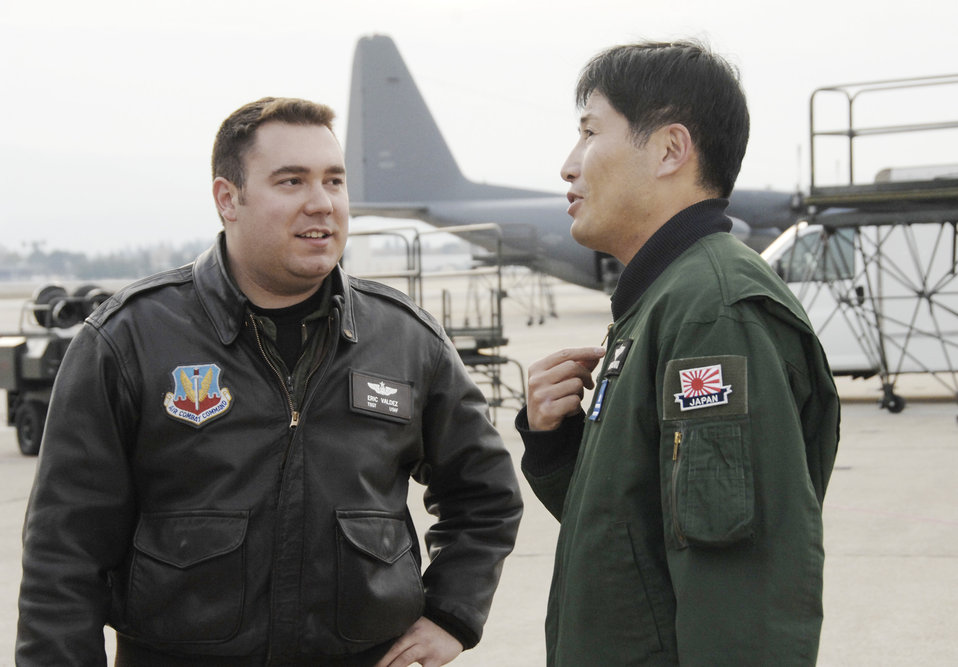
Rescue crews train Japan Air Self Defense Force pilots

Maj. Masahiko Miyazaki speaks with Tech. Sgt. Eric Valdez about their air refueling training Dec. 9, 2009, at Moffett Federal Airfield, Calif. Major Miyazaki is a Japan Air Self-Defense Force C-130H Hercules pilot with the 1st Tactical Airlift Wing at Komaki Air Base, Japan. Sergeant Valdez is an aircraft loadmaster with the 130th Rescue Squadron at Moffett Field.